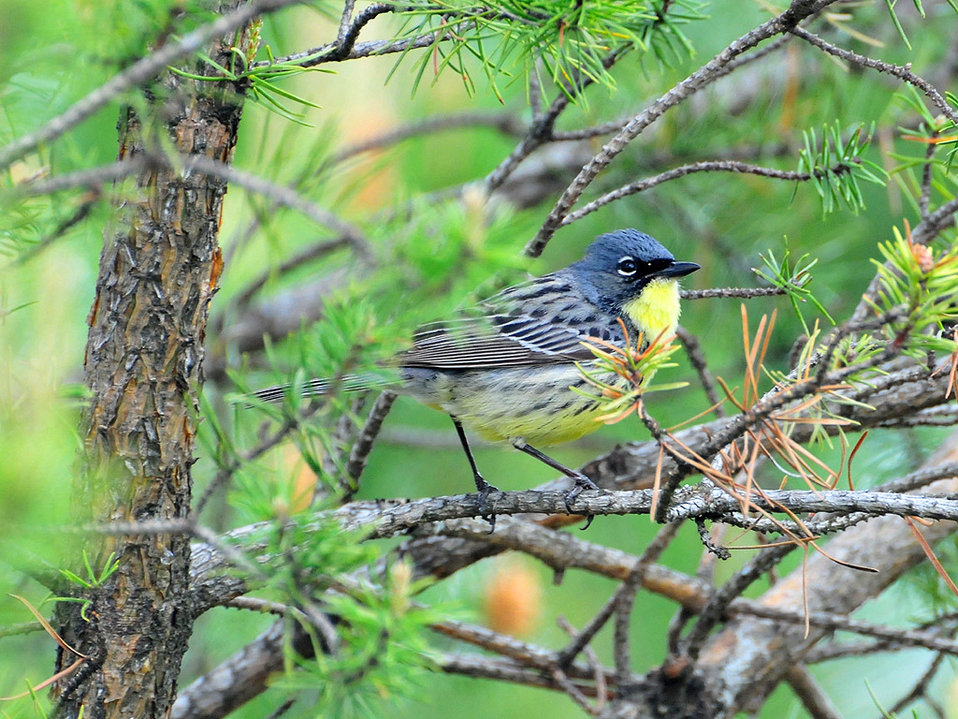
Endangered Kirtland's warbler (Dendroica kirtlandii)

Learn about the historical importance of fire in managing healthy jack pine forests in Michigan, which the endangered Kirtland’s warbler depends: www.fws.gov/endangered/news/episodes/bu-10-2011/kirtlands...